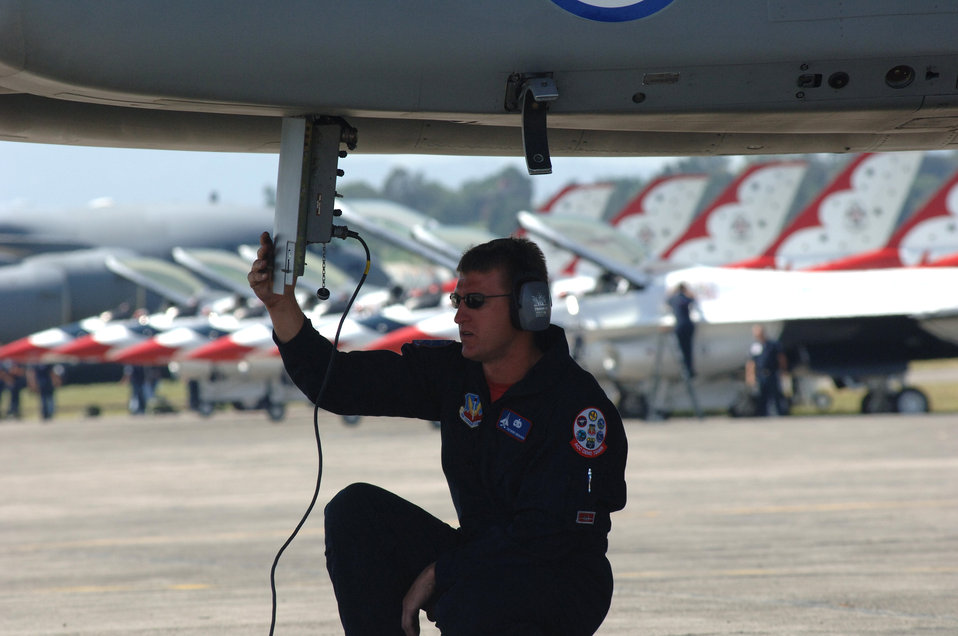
Guatemalan International Air Show 2005

GUATEMALA CITY, GUATEMALA- Tech. Sgt. Barry Snokhous checks an F-15 Eagle's fire warning system prior to its performance in a Guatemalan International Air Show 2005. Sergeant Snokhous is a member of the West Coast F-15 Demonstration Team, which participated in the airshow Oct. 26 as part of a three-country tour to include Guatemala, EL Salvador, and Mexico.